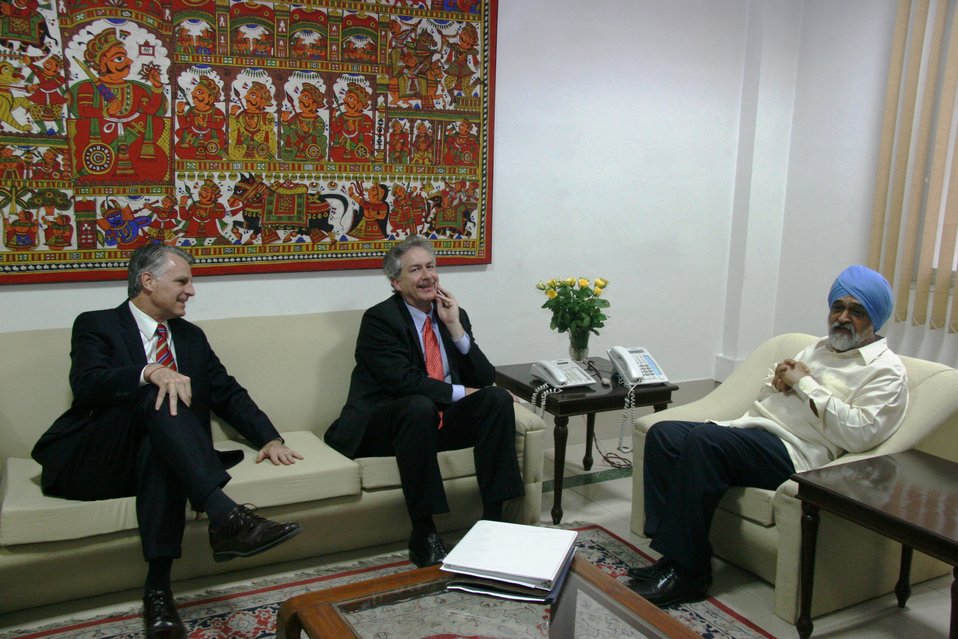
Ambassador Roemer, Under Secretary Burns, and Indian Prime Minister Deputy Chairman of the Planning Commission Montek Singh Ahluwalia Meet in New Delhi

U.S. Ambassador to India Timothy J. Roemer, Under Secretary for Political Affairs William J. Burns, and Indian Deputy Chairman of the Planning Commission Montek Singh Ahluwalia meet in New Delhi, India, on .